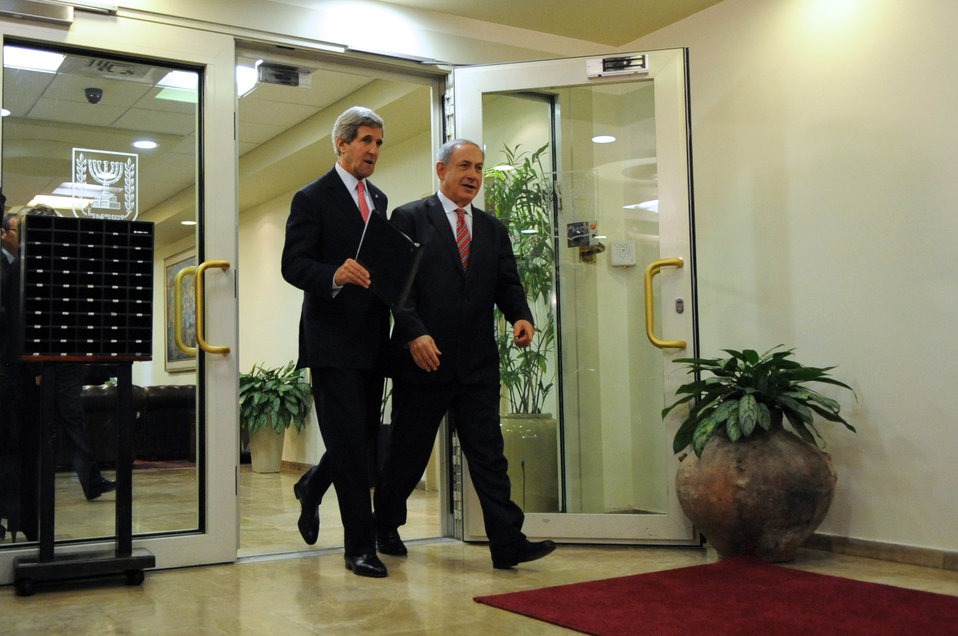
Secretary Kerry and Israeli Prime Minister Netanyahu Arrive for a Press Conference

U.S. Secretary of State John Kerry and Israeli Prime Minister Benjamin Netanyahu arrive for a news conference at Prime Minister Netanyahu's office in Jerusalem on December 5, 2013.